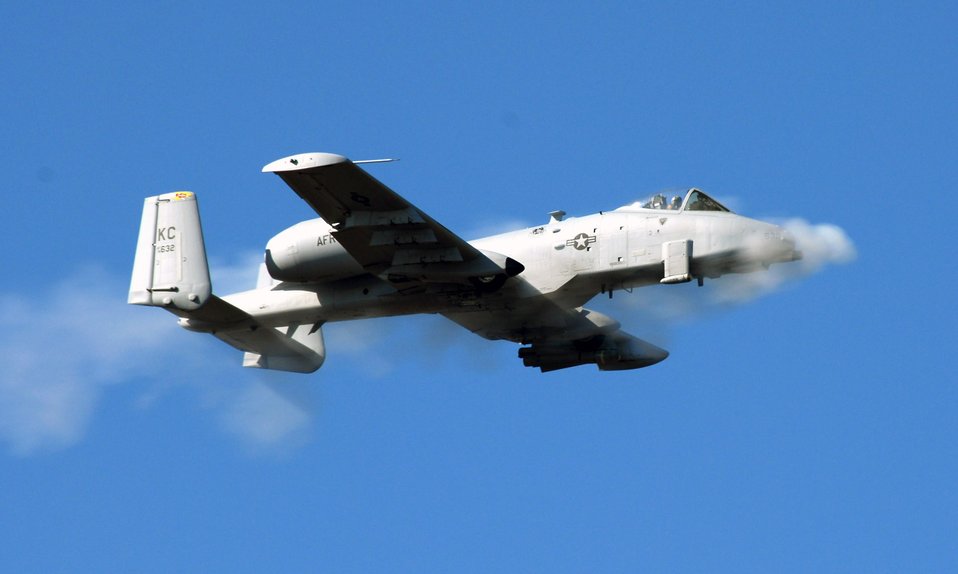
A-10 smokes in Hawgsmoke 2008

An A-10 Thunderbolt II pilot from the Air Force Reserve Command's 442nd Fighter Wing fires the aircraft's 30-mm cannon toward a target Oct. 16 at the Smoky Hill Range near Salina, Kan. The 442 FW is hosting the competition.